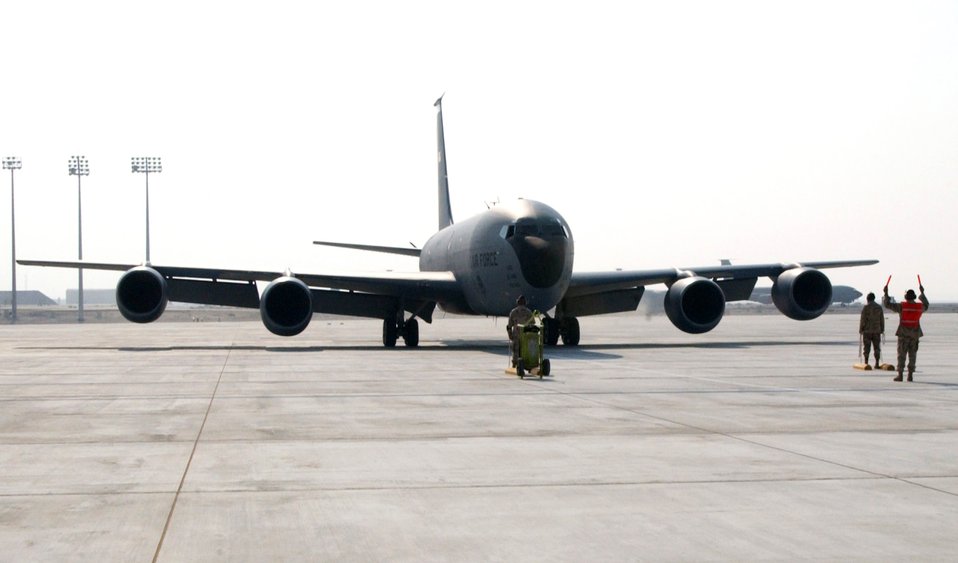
New tanker ramp opens at deployed base

SOUTHWEST ASIA (AFPN) -- A crew chief signals to the pilot of a KC-135 as the aircraft becomes the first to taxi onto this desert air bases new tanker ramp Oct. 22. The new ramp allows the 380th Air Expeditionary Wing to consolidate many of its aircraft in one area, increasing efficiency.